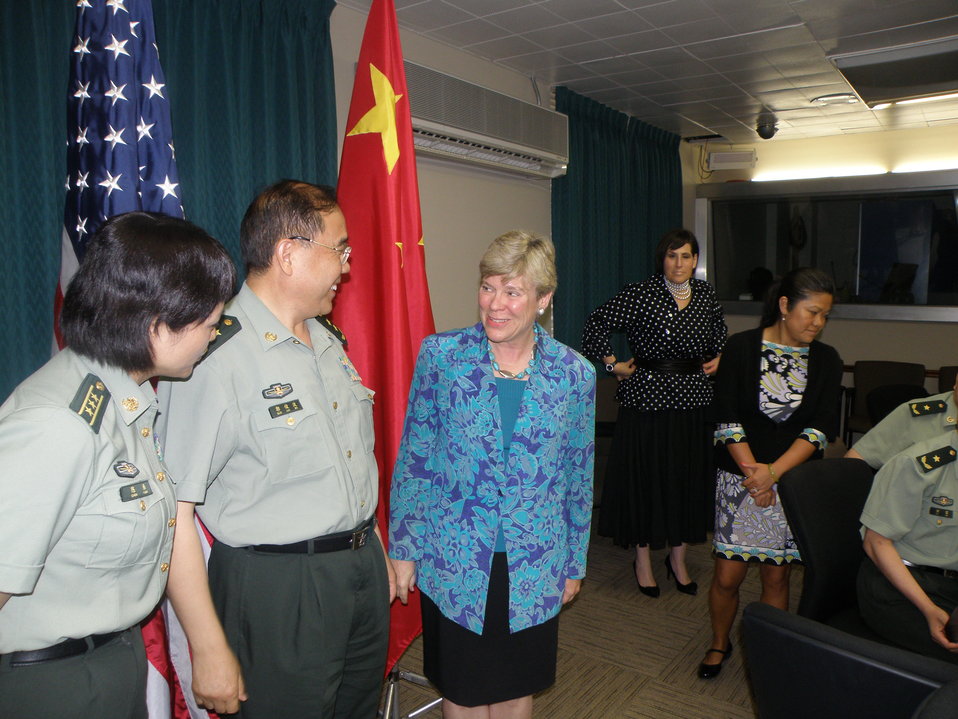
Assistant Secretary Gottemoeller Meets With Chinese Senior Military Officers

Assistant Secretary of State for Arms Control, Verification and Compliance Rose Gottemoeller meets with a group of visiting senior military officers from China, at the U.S. Department of State in Washington, D.C., on June 16, 2011.